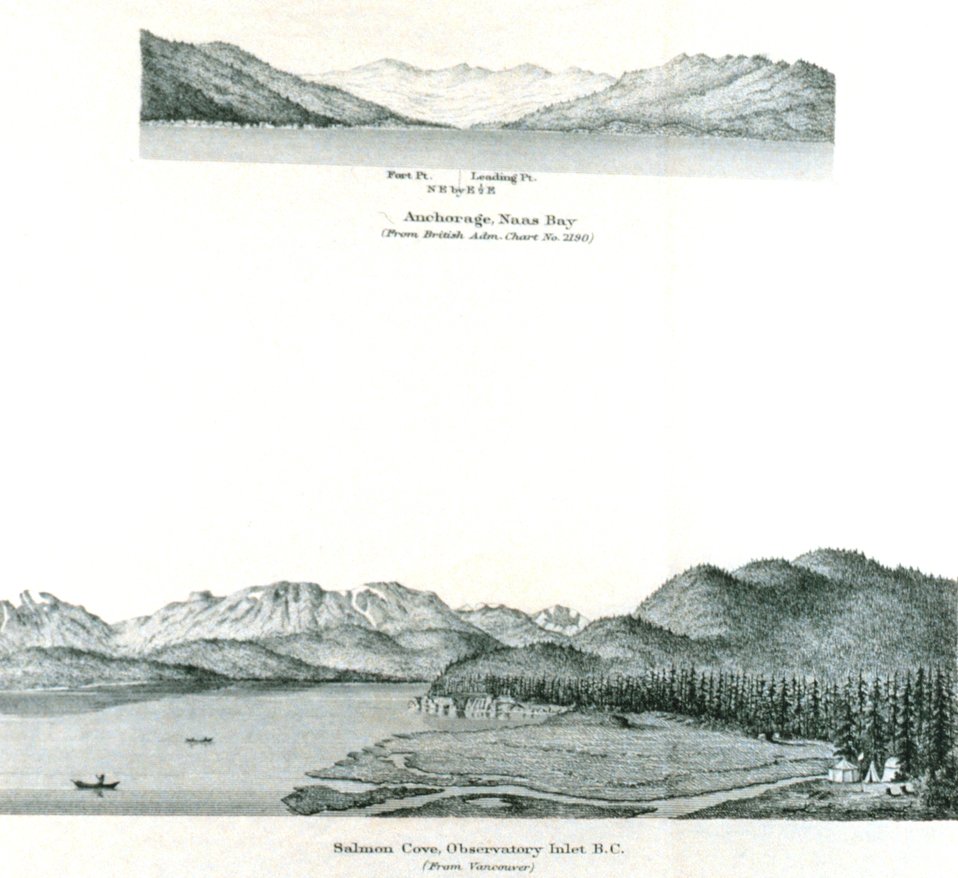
Anchorage Naas Bay. Salmon Cove Observatory Inlet, B. C. In: Pacific Coast Pilot Alaska Part I 1883. P. 58. Library call number VK943 .N3 1883.